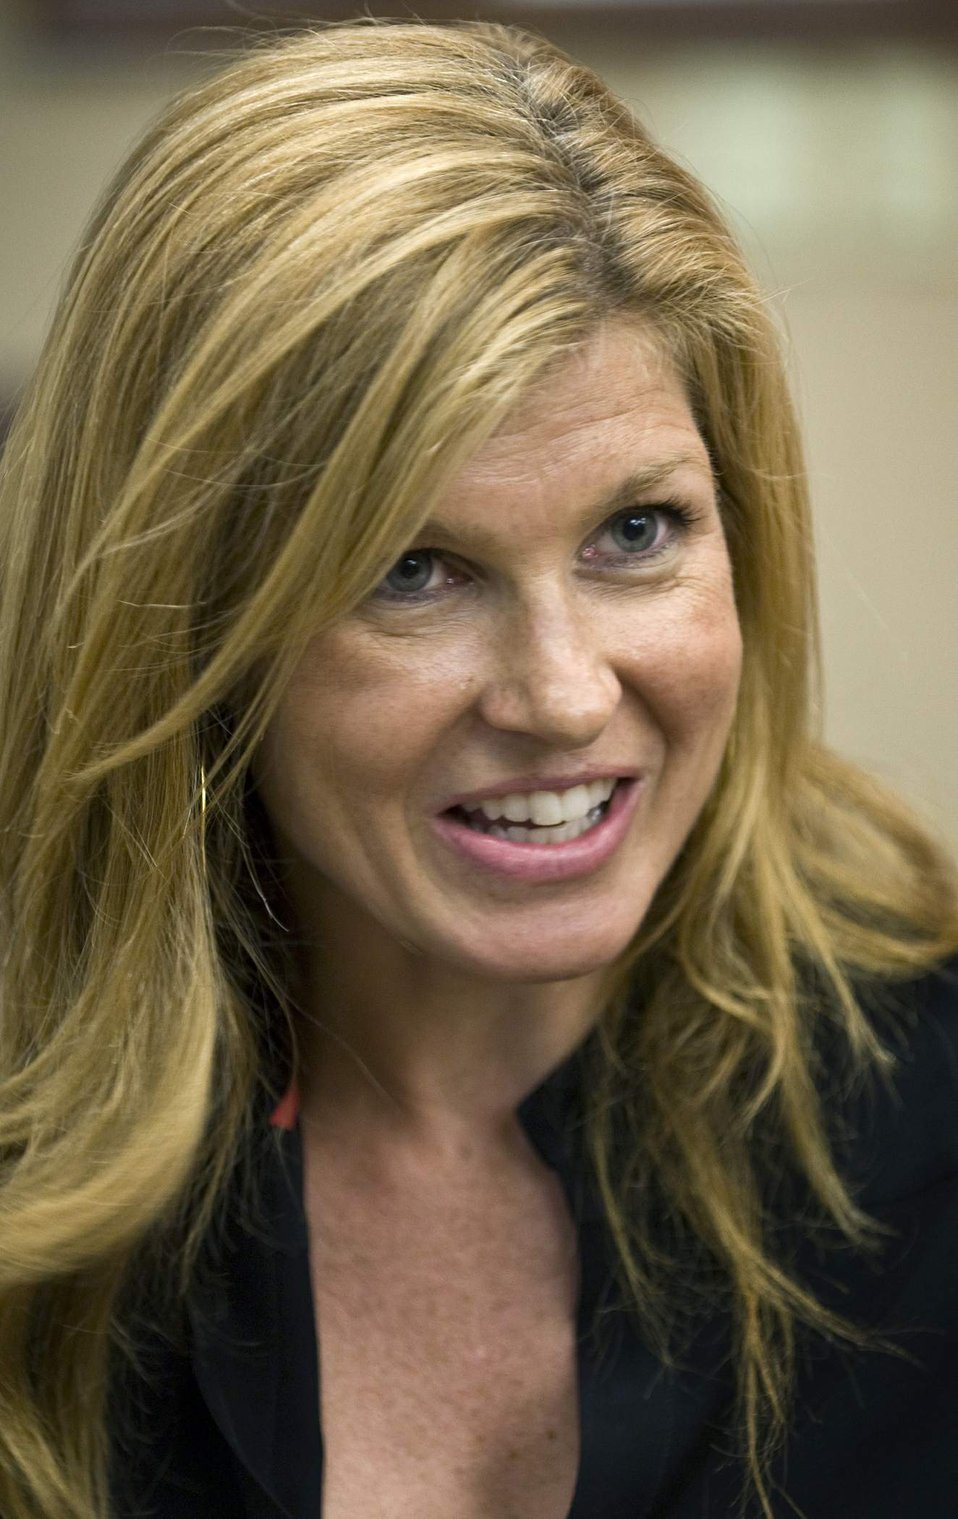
'Friday Night Lights' actors thank wounded warriors